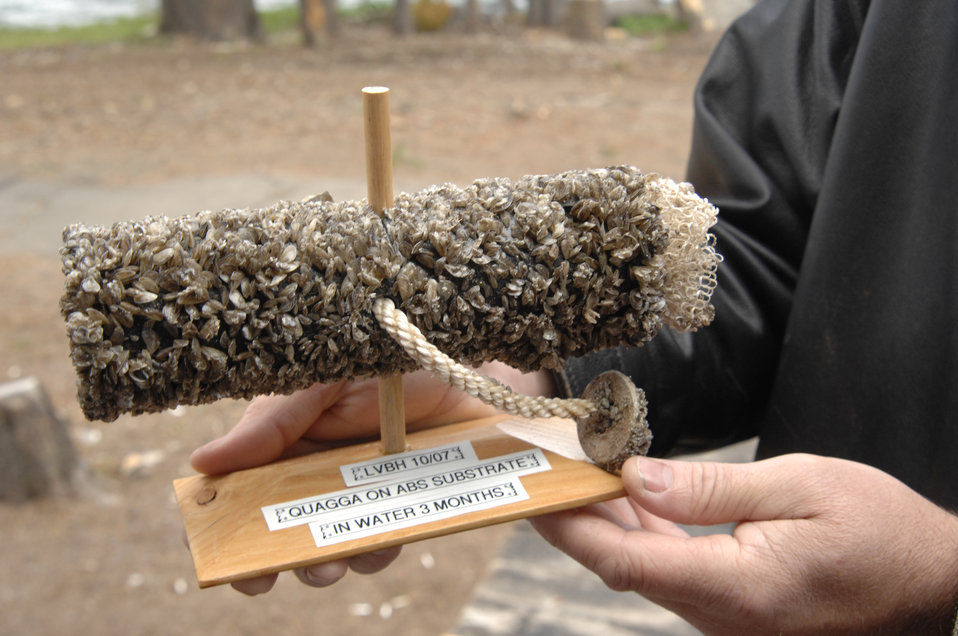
The Quagga mussel is an aquatic invasive species found at Diamond Lake in Umpqua National Forest in Oregon on June 10, 2008. These mussels attach to hard surfaces such as pipes, screens, rock, logs, boats, and ropes. A species is considered invasive it is nonnative to the ecosystem and its introduction causes or is likely to cause economic or environmental harm or harm to human health. The goal of the U.S. Department of Agriculture’s (USDA) Forest Service (FS) invasive species program is to reduce, minimize, or eliminate the potential for introduction, establishment, spread, and impact of invasive species across all landscapes and ownerships.